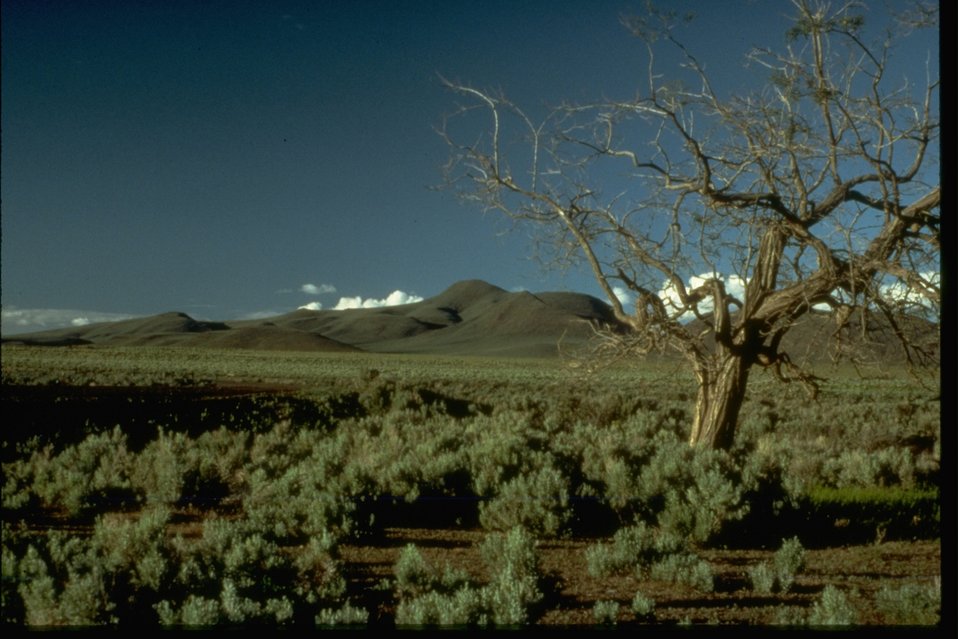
View of Sheepshead Mountain.